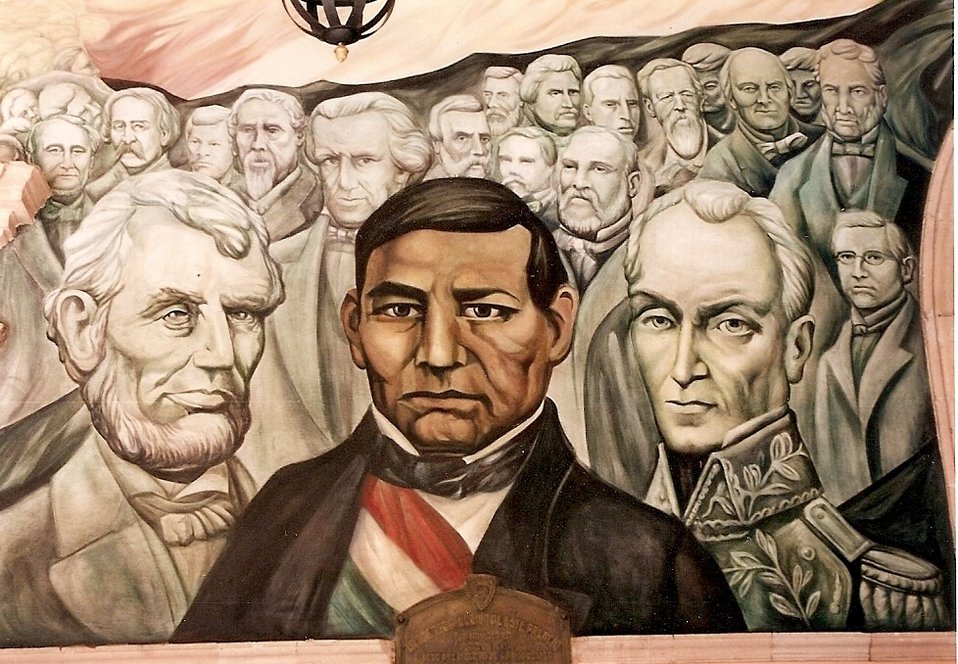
Panel of Piña mural in the Government Palace in Chihuahua, Mexico, honouring the liberators Abraham Lincoln, Benito Juárez and Simón Bolivar